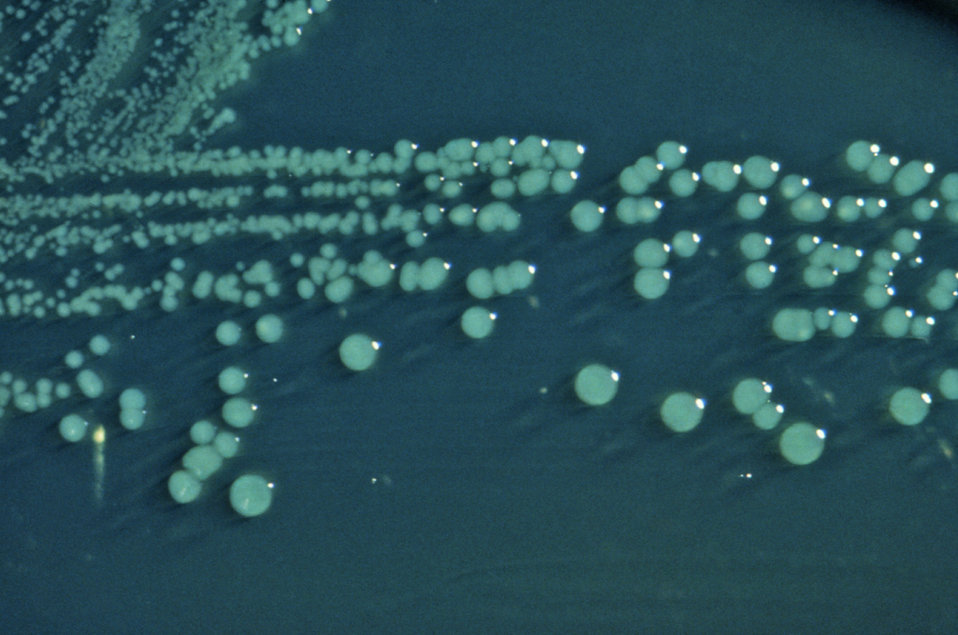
This photograph depicts the colonial morphology displayed by Shigella boydii bacteria cultivated on a Hektoen enteric (HE) agar surface; colonies of S. boydii bacteria grown on HE agar display a raised, green, and moist appearance.